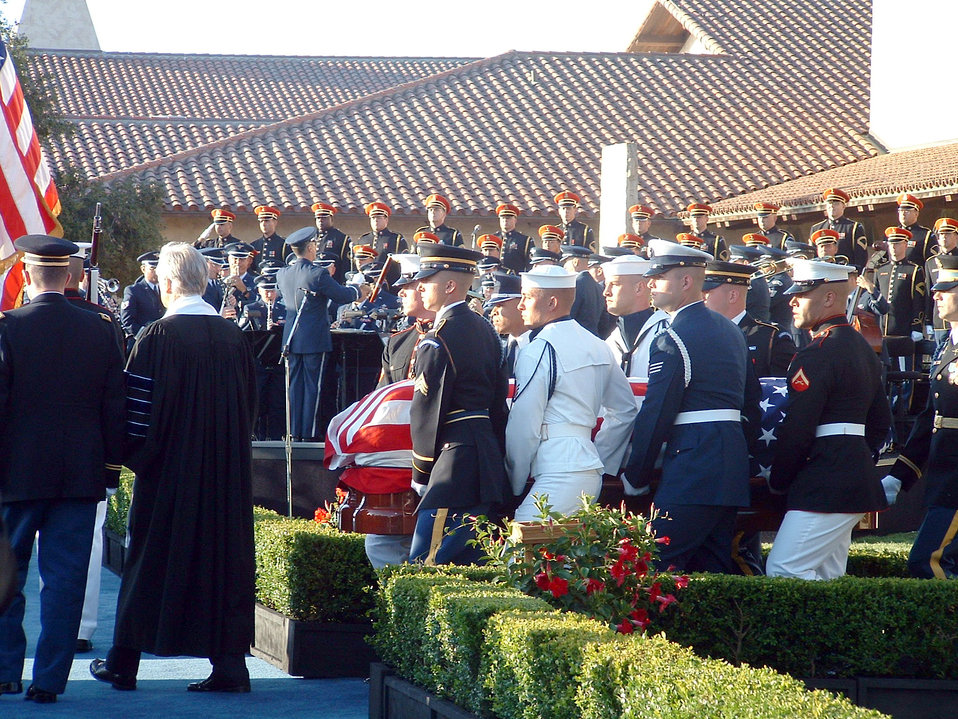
Farewell Mr. President

SIMI VALLEY, Calif. -- The combined military forces honor cordon carries the casket of former President Ronald Reagan to the stage as the U.S. Air Force Band of the Golden West plays in the background at the sunset interment ceremony June 11. The ceremony followed President Reagan's state funeral service at the National Cathedral in Washington. President Reagan was flown to the nation's Capitol on June 9 following his death here June 5.